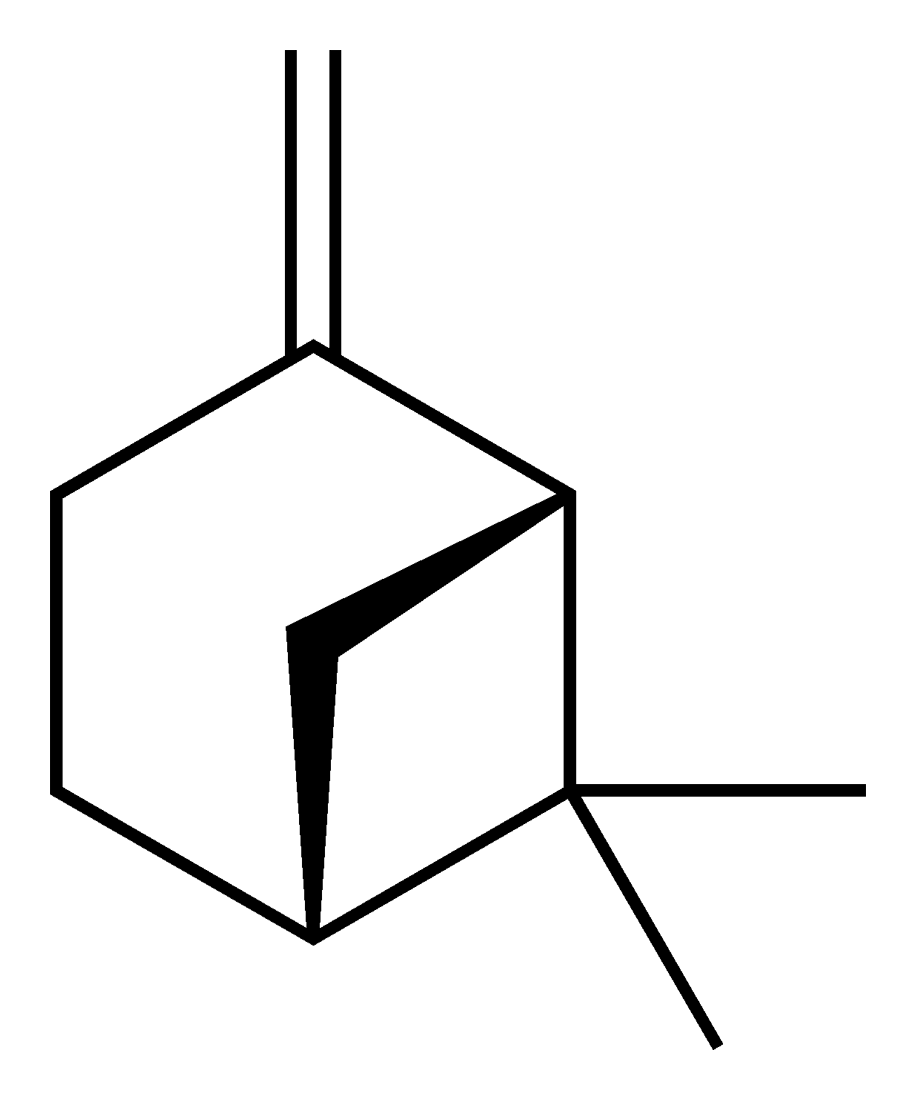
Skeletal formula of the (1R)-( )-β-pinene molecule, C10H16.